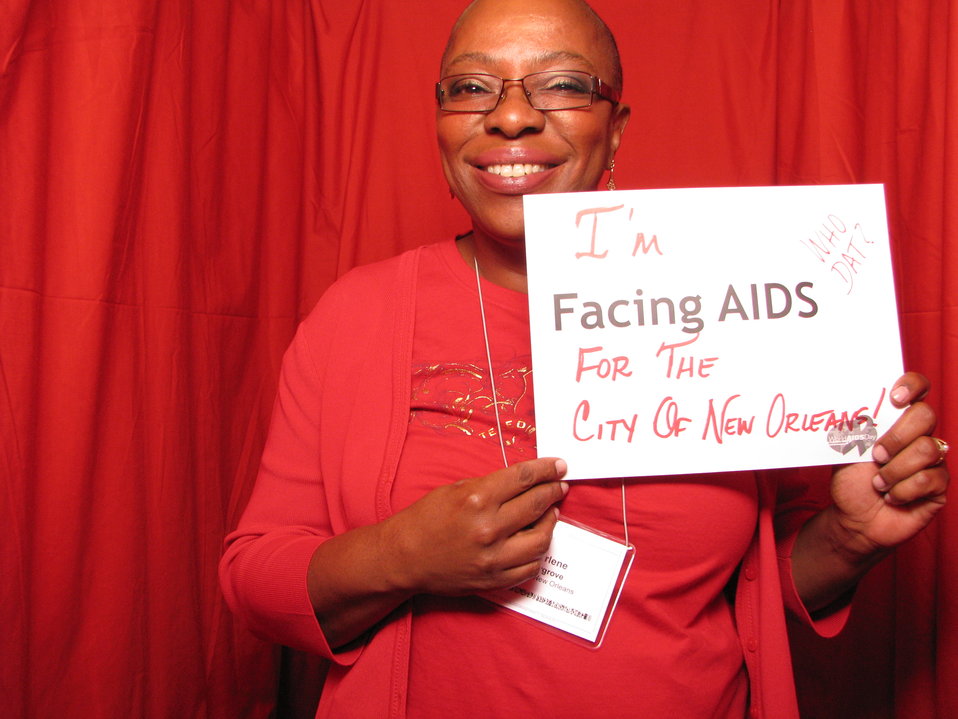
I'm FACING AIDS for the City of New Orleans! WHO DAT?

From the AIDS.gov photo booth at the U.S. Conference on AIDS, September 2010 (Orlando, FL).